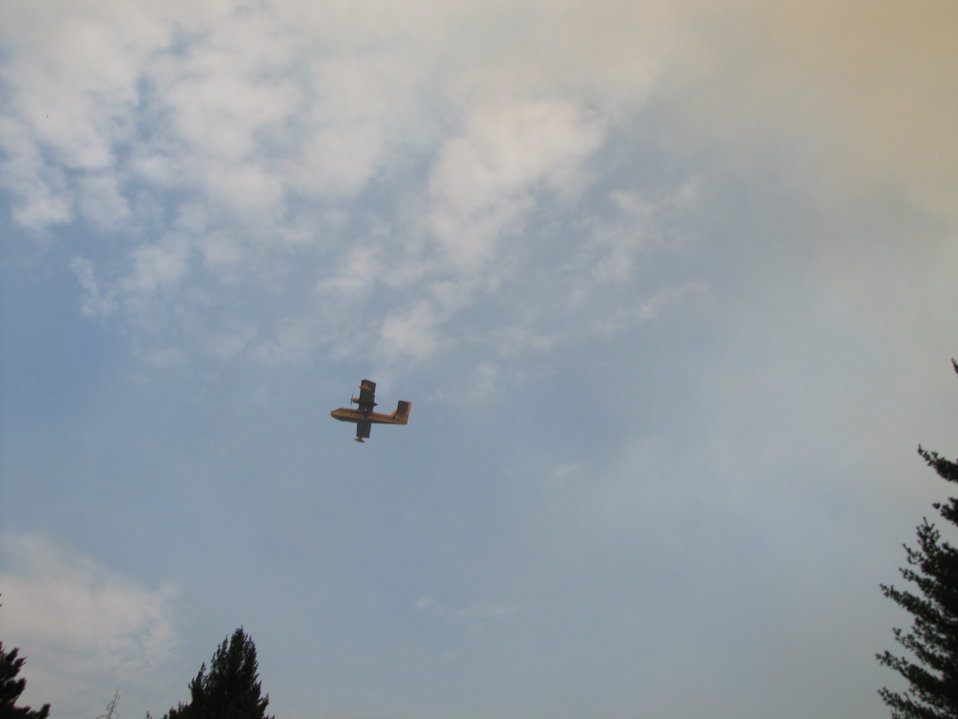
Scoop Ship Airplane

A scoop ship airplane. These planes have been filling with water on Big Manistique Lake and then dropping it on the fire.